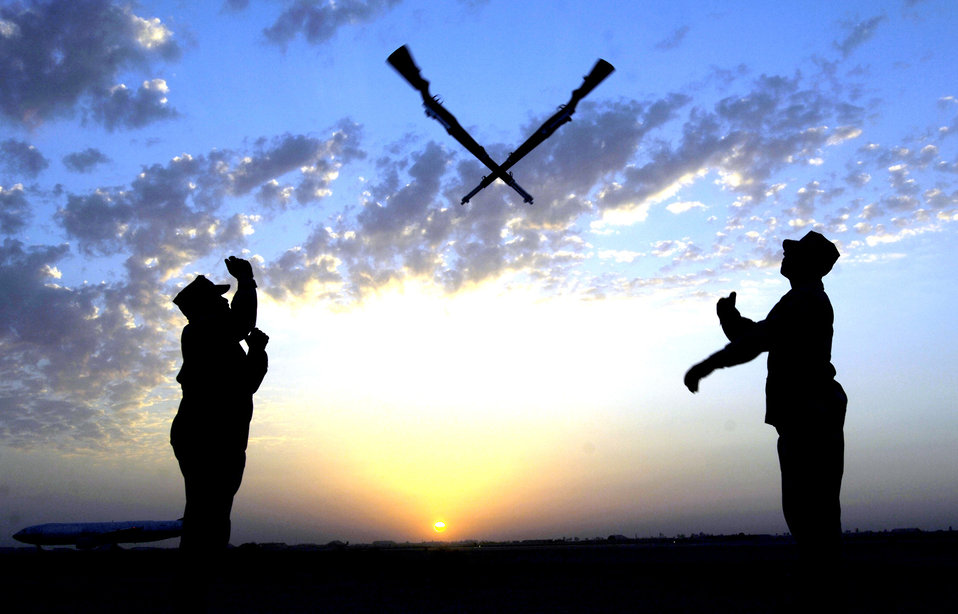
Maneuver

BALAD AIR BASE, Iraq -- Staff Sergeants Michael Miller and Sean Hannah perform the